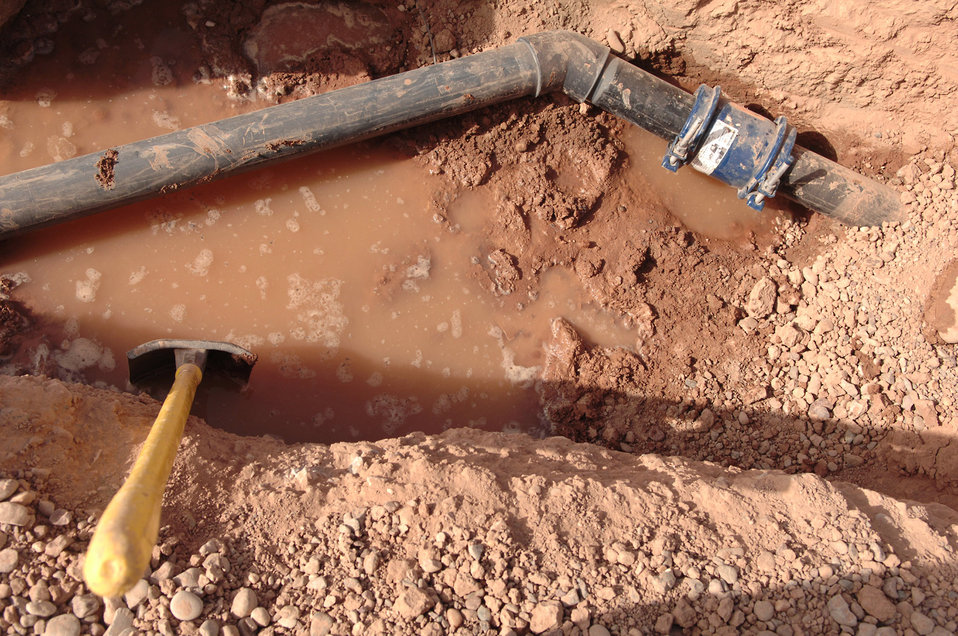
Water engineering

The 332nd Civil Engineer Squadron utilities shop is knee deep in a pipe infrastructure replacement project for the entire Air Force housing area March 24 at Balad Air Base, Iraq. The project was started Feb. 11 and is projected to be completed by mid-June. The plumbers are removing old pipe infrastructures and replacing them with newer and thicker gauge pipes that will bring the base to the next echelon of stability.